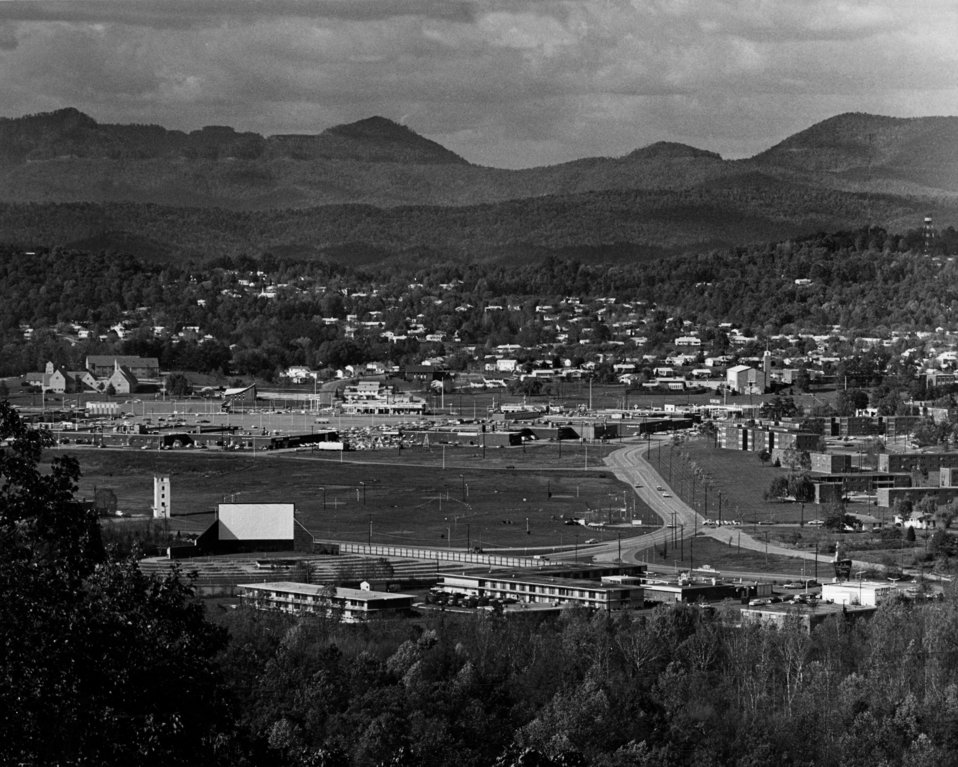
General View of City of Oak Ridge

67-278-5 DOE photo Frank Hoffman 10-10-1967 Oak Ridge Tennessee